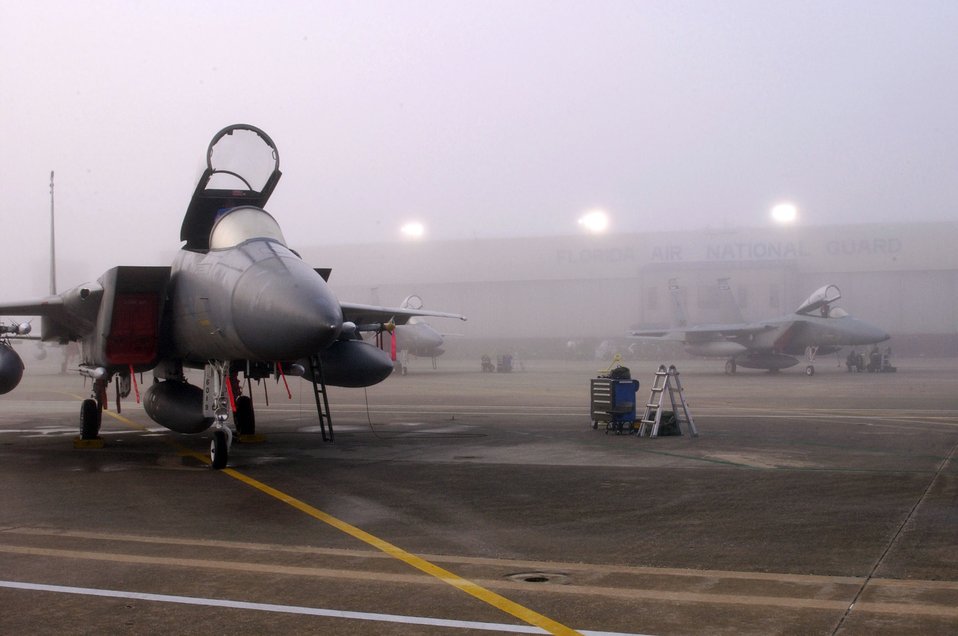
Flight preparation

JACKSONVILLE AIR NATIONAL GUARD BASE, Fla. (AFPN) -- An F-15 Eagle sits on the flightline here before a morning launch Jan. 22. The Eagles are with the 125th Fighter Wing. The wing is participating in an operational readiness exercise to help ensure the unit is capable of deploying personnel and equipment safely and efficiently.